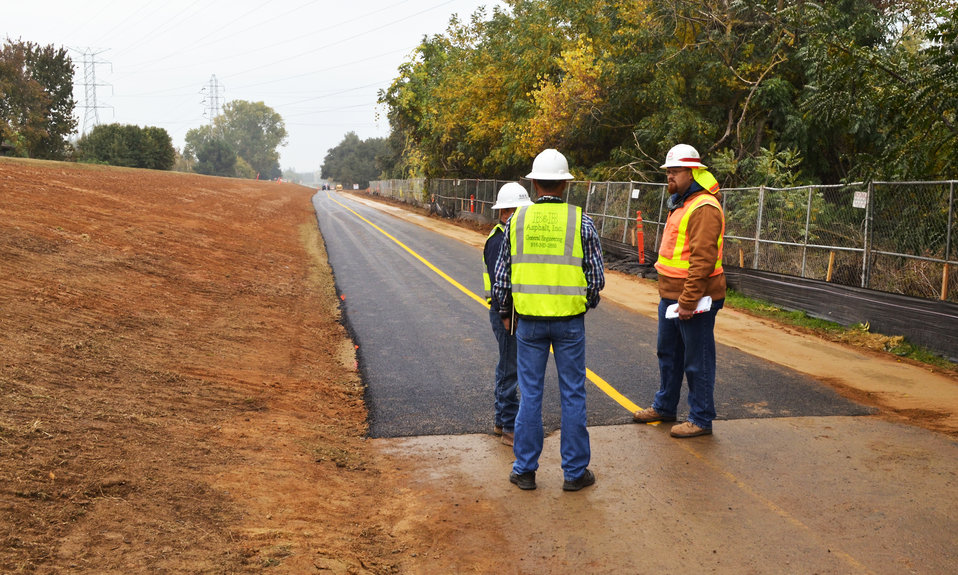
American River Parkway trail inspection

Ed Stewart, construction representative with the U.S. Army Corps of Engineers Sacramento District, reviews the remaining asphalt work on the American River Parkway trail near the California State University-Sacramento campus in Sacramento, Calif., with contractors on the project Nov. 16, 2012. The inspection is one of the last steps before the heavily-used recreational trail can be reopened later this month. The detour was necessary while levee construction proceeded along the American River during the summer. The work is part of the American River Common Features project, a joint effort between the Corps, the state’s Central Valley Flood Protection Board and the Sacramento Area Flood Control Agency to reduce flood risk for Sacramento.